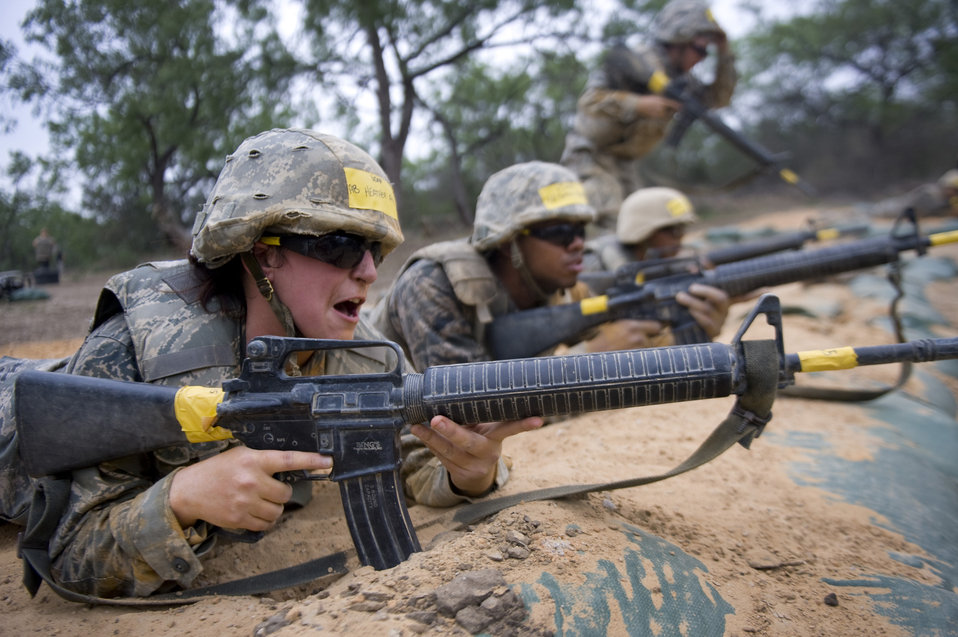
BEAST

Basic trainees go through their sixth week of Air Force basic military training at the Basic Expeditionary Airman Skills Training on May 25, 2011, at Lackland Air Force Base, Texas.